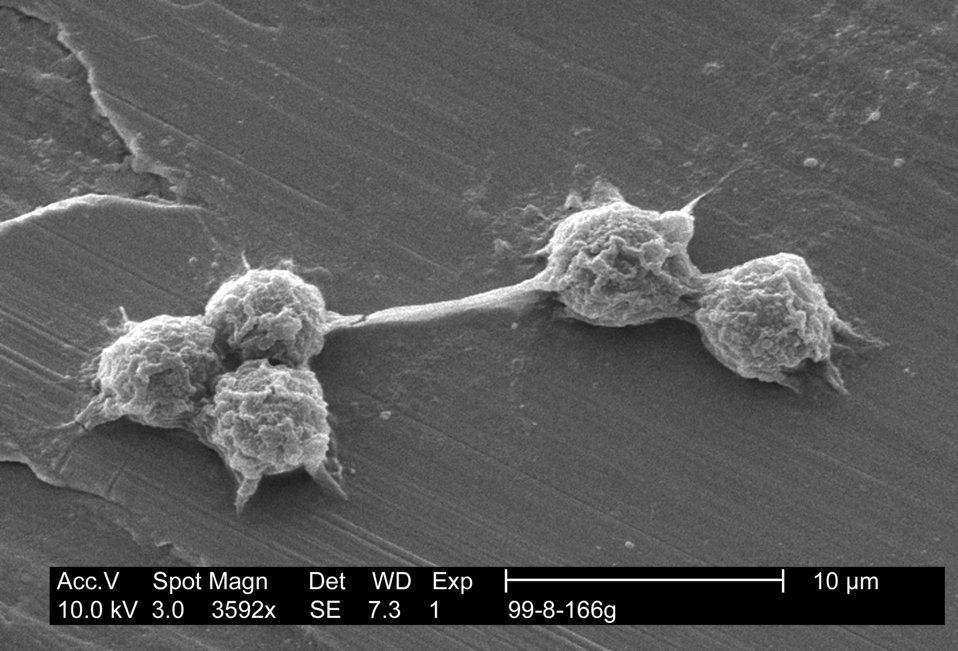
Scanning electron micrograph of a laboratory-grown potable water biofilm, with the presence of Hartmannella vermiformis cysts.